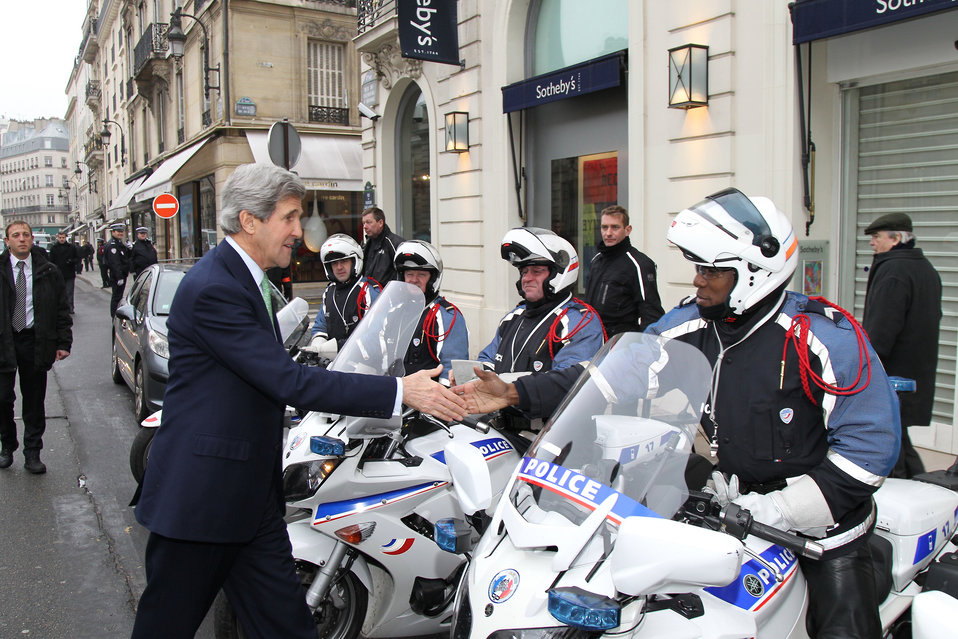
Secretary Kerry Greets Security Detail in Paris

U.S. Secretary of State John Kerry greets a motorcycle officer working on his security detail in Paris, France, on February 27, 2013.